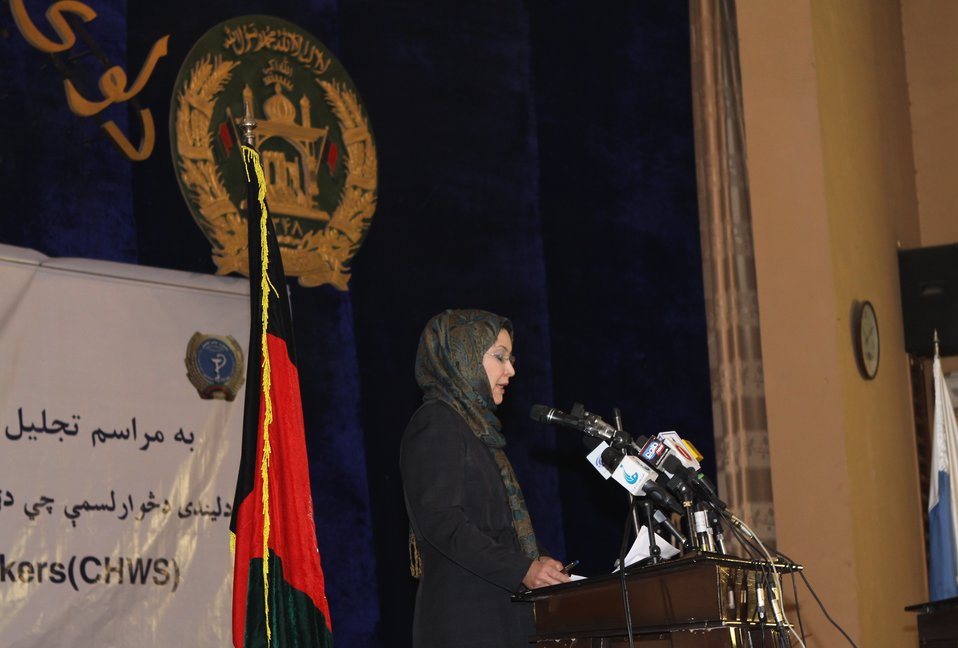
Community Health Workers Celebrated

Kabul, Afghanistan | December 5, 2010 — In support of the United Nations designated International Volunteer Day for Economic and Social Development, Afghanistan’s Ministry of Public Health celebrated its annual Community Health Worker Day today. Acting Minister of Public Health Dr. Suraya Dalil, USAID Senior Deputy Mission Director Robert Hellyer, other government officials, and international donors joined in recognizing the critical contribution of community health workers in Afghanistan and encouraging them to continue their voluntary support to their communities.
The event praised the contributions of the more than 22,000 volunteers throughout the country who deliver community level health-education, counseling, and services out of village health posts located in private homes. The Ministry of Public Health envisioned that community-based healthcare programs will actively encourage communities and families to adopt healthy lifestyles and behaviors, and provide families access to high quality and socially acceptable preventative medicine and life-saving services.
“We have 22,000 community health workers in Afghanistan that are able to implement the basic and standard medicines. They all have been trained through a job description,” said Minister Dalil. Addressing the health workers, she added, “I am proud and feel powerful that I have people like you.”
USAID-funded health projects collaborate closely with the Ministry of Public Health to improve the health and nutritional status of Afghans, provide quality primary healthcare, and promote healthy behaviors at the community and household-levels. USAID supported the training of more than 9,000 of the volunteer community health workers currently working in Afghanistan.
“On behalf of the American people, I congratulate the Community Health Workers for their diligence to gain the skills and knowledge necessary to serve their communities in this important role,” said USAID Senior Deputy Mission Director Hellyer. “USAID strongly supports community based health care and believes that quality community-based health services are essential to reaching Afghanistan’s Millennium Development Goals.”
To support the Basic Package of Health Services, USAID assisted in developing the community health worker training manual, helped train community health worker supervisors and master-trainers, facilitated in-service training, and produced and developed reporting tools, job aids, and education materials.